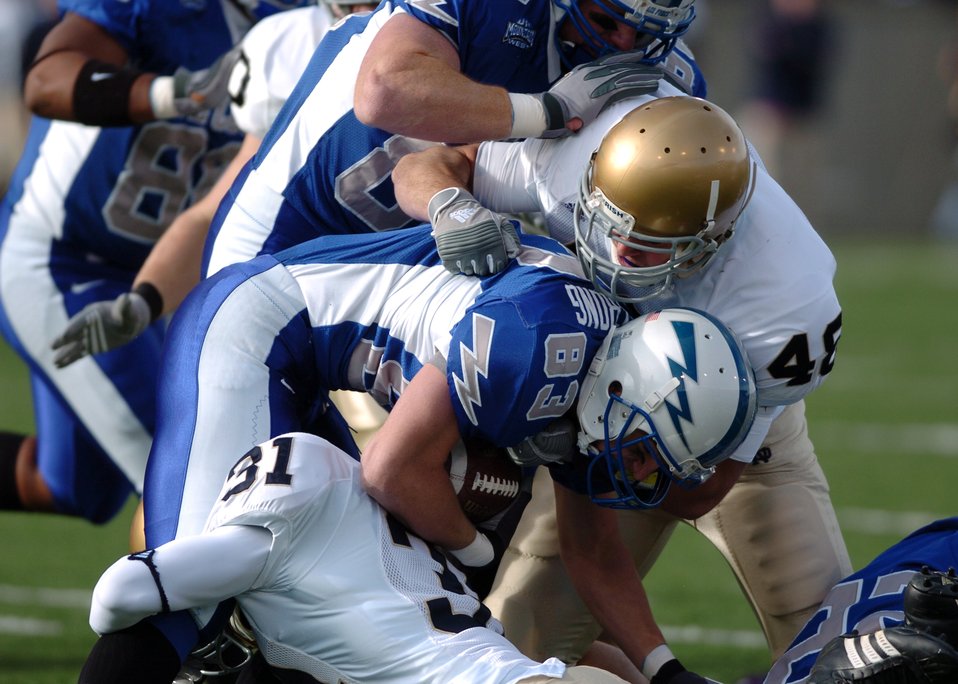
Wrapped Up

Air Force kick returner Spencer Armstrong is wrapped up by Notre Dame special teams defenders Sergio Brown and Steve Quinn after a 17-yard runback Saturday. Armstong returned three of the Irish?s five kickoffs on the day. 8th-ranked Notre Dame won, 39-17.